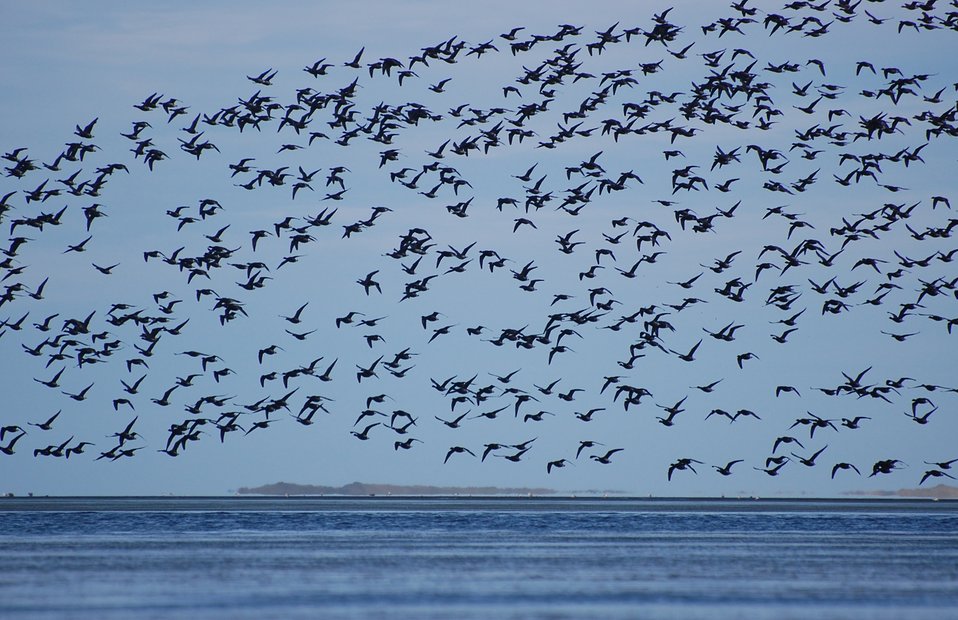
Brant at Izembek Lagoon, Izembek National Wildlife Refuge